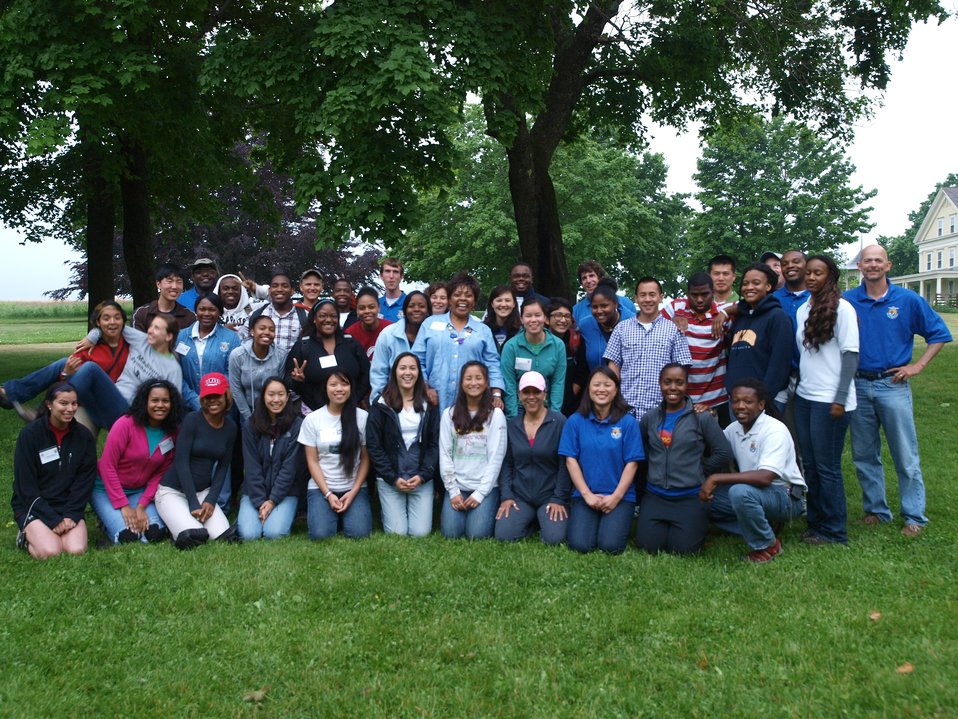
Group shot of the 2010 CIP crew.